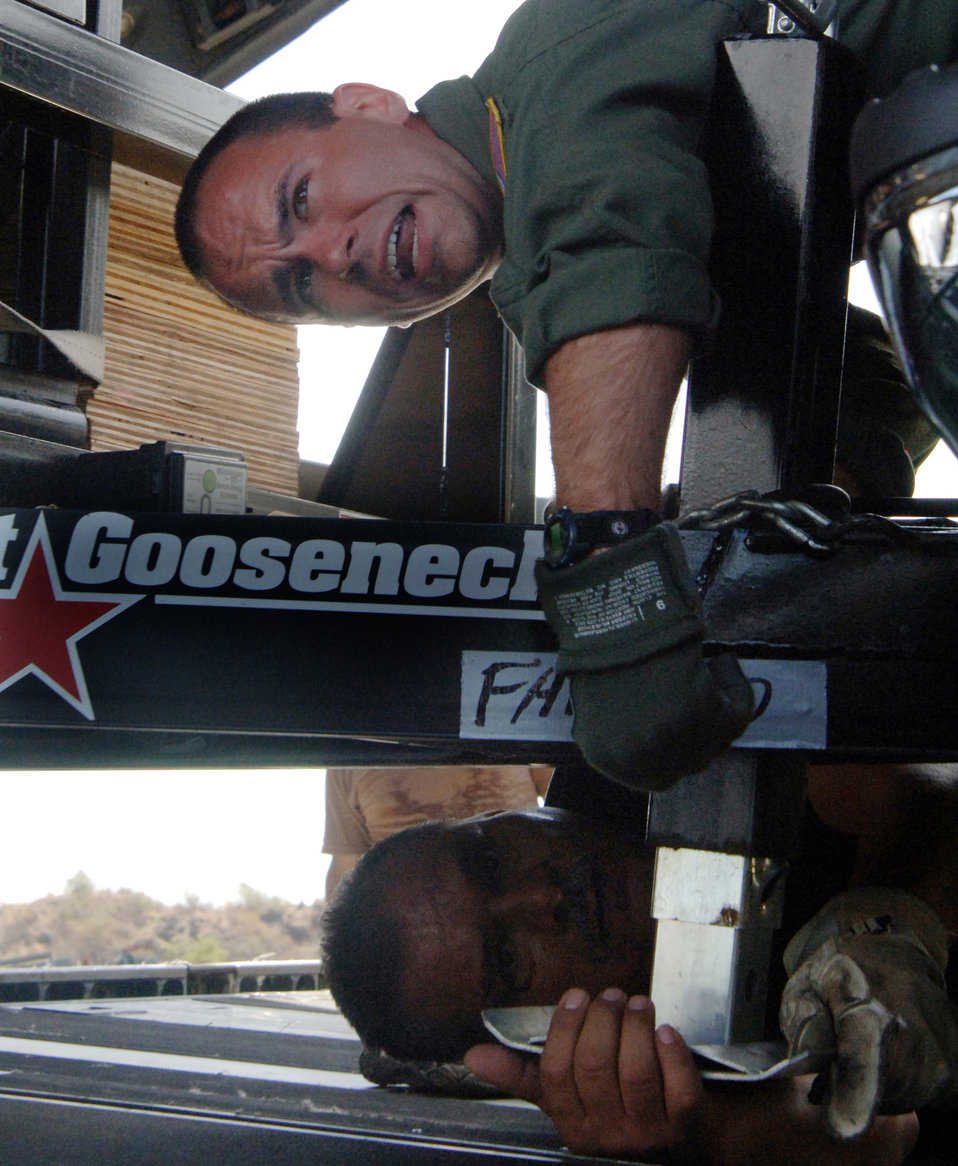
Reserve aircrew helps fight war on drugs

Tech. Sgt. Mike Smith (top) and Senior Master Sgt. Jesus Suniga position a trailer to be loaded at a Saint Lucia airport for a return flight Sunday, April 9, 2006. The aircrew delivered construction materials and Reserve civil engineers who are building an operations center and barracks for the police force in support of Saint Lucia's counter-drug operations. Sergeant Smith is a loadmaster with the 300th Airlift Squadron at Charleston Air Force Base, S.C., and Sergeant Suniga is with the 433rd Civil Engineer Squadron at Lackland AFB, Texas.